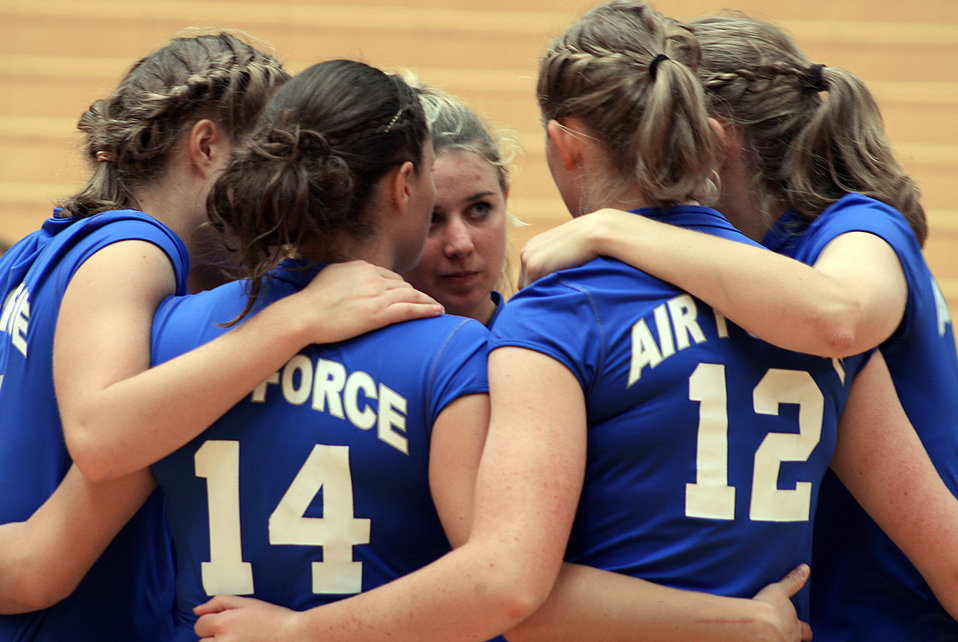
Left side is weak, hit there

U.S. Air Force Academy women's volleyball team members huddle during a match at a tournament in Denver recently. The Air Force's 5-3 season start is the team's best opening series since 2003.